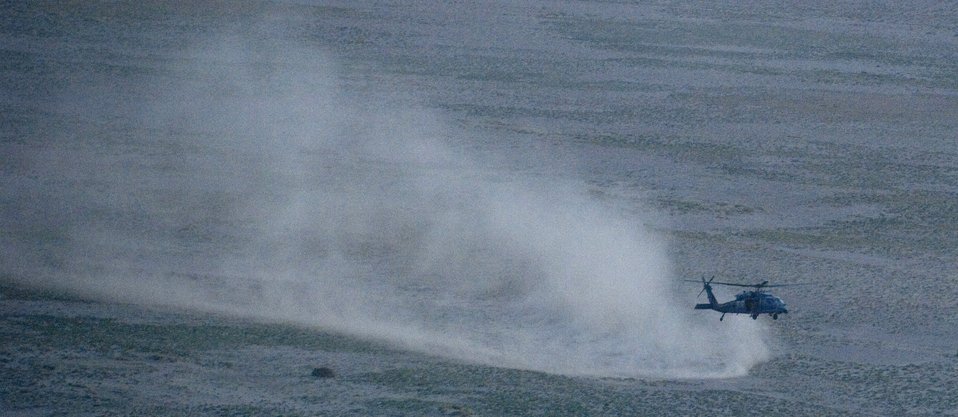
HH-60Gs integrate with Army AH-64s for war missions

An HH-60G Pave Hawk conducts combat search and rescue training mission Sept. 25 near Bagram Air Field, Afghanistan. The training mission was conducted with support from the Army's AH-64 Apaches in an effort to integrate operations in high-threat environments.